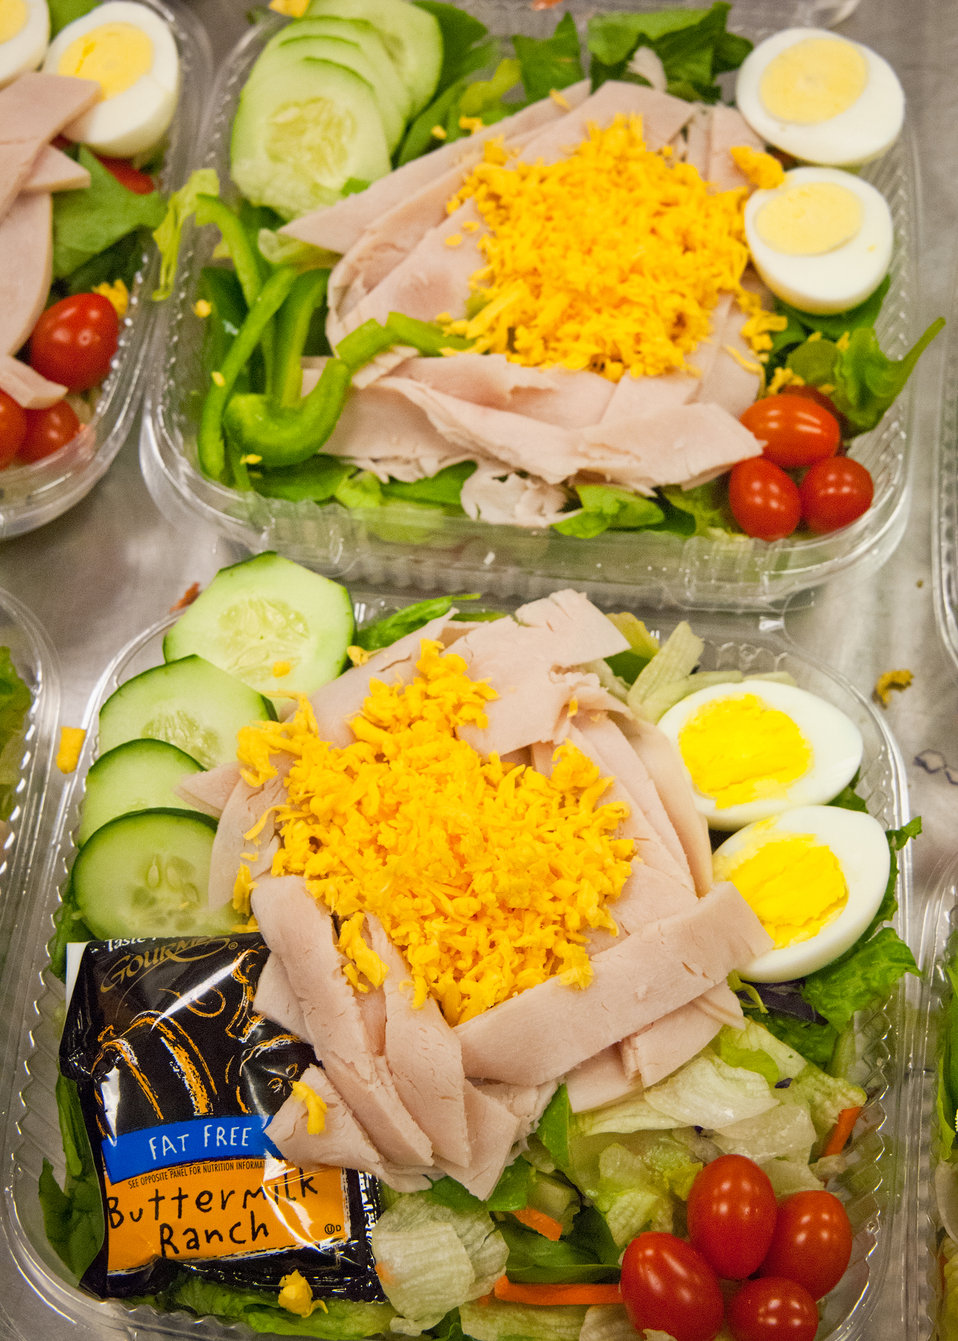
Healthy Garden Salads prepared for the National School Lunch Program in the kitchen at Washington-Lee High School in Arlington, Virginia, Wednesday, October 25, 2011. The National School Lunch Program is a federally assisted meal program administered by the United States Department of Agriculture, Food and Nutrition Service operating in public, nonprofit private schools and residential child care institutions. It provides nutritionally balanced, low-cost or free lunches to children each school day.